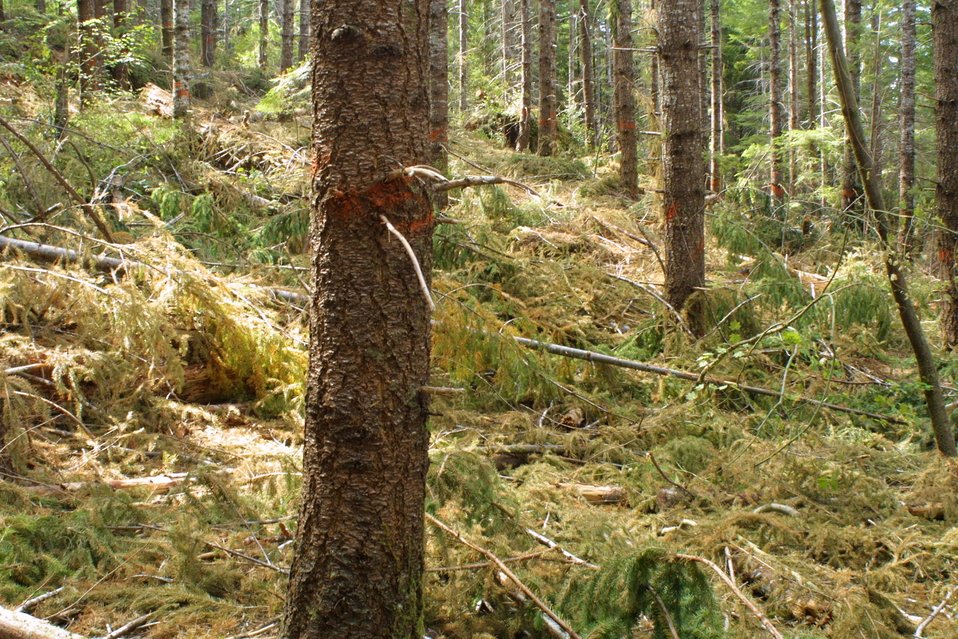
Camas East Timber Sale in Late Successional Reserve.